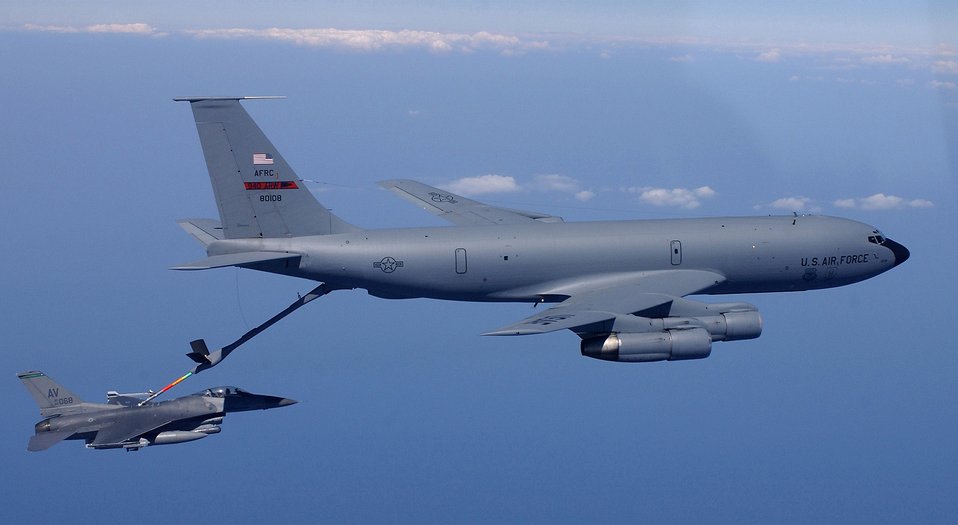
Tanker contract award announced

FILE PHOTO -- A KC-135 Stratotanker refuels an F-16 Fighting Falcon. Air Force Secretary Dr. James G. Roche concluded testimony before the Senate Armed Services Committee on Sept. 4. He answered questions about the 2004 Air Force Tanker Lease Proposal, which would replace ageing KC-135s with leased KC-767s.